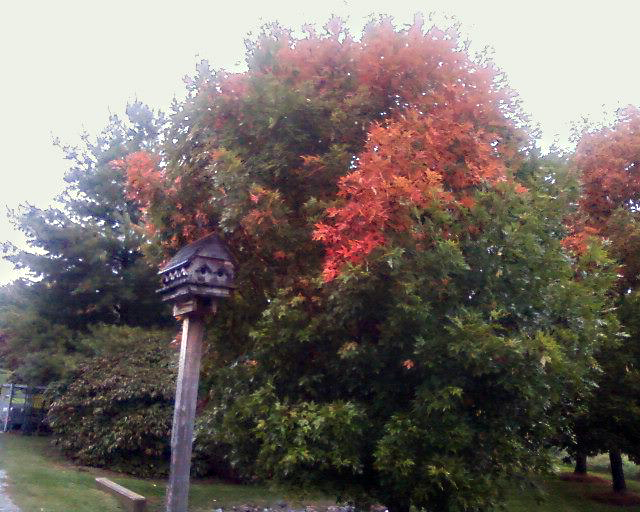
Photo of the Week - Fall Colors (WV)

Photo of the week - 10/17/11

Fall colors at the National Conservation Training Center in Shepherdstown, WV.